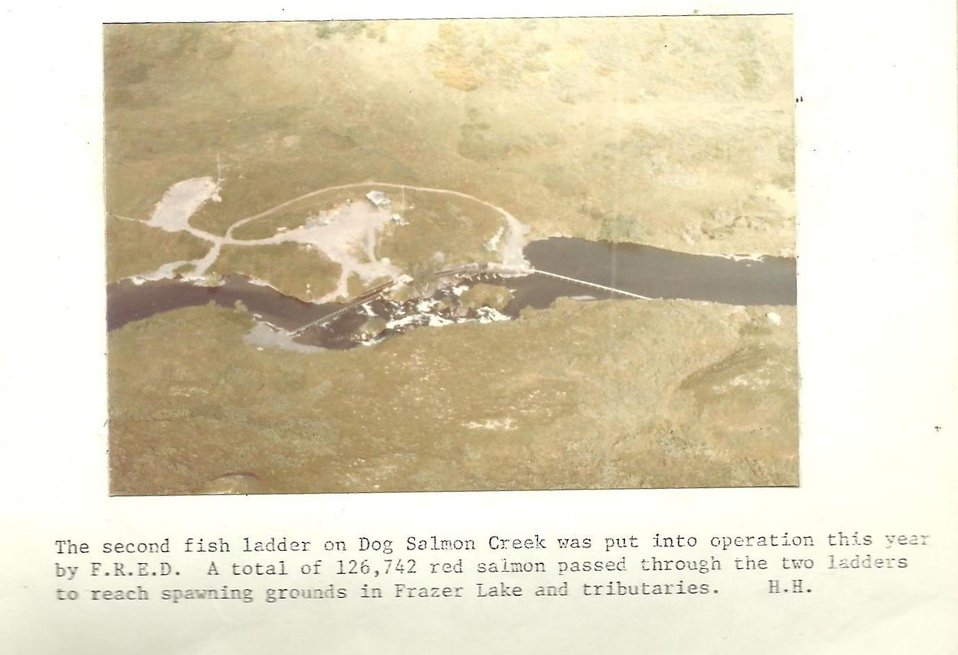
(1979) Dog Salmon Creek

Credit: USFWS

Source and Contact: Kodiak National Wildlife Refuge